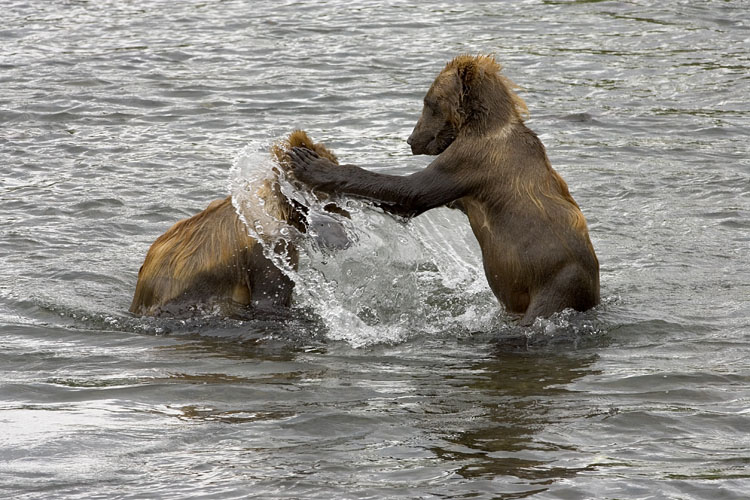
Kodiak Brown Bears

Playful Kodiak Bears